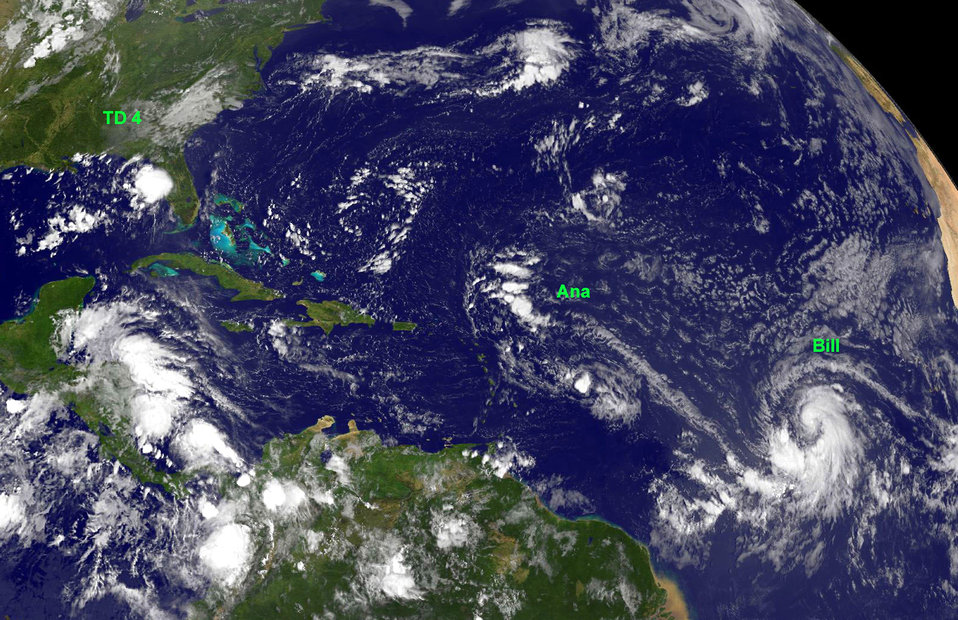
August 16, 2009 - Hurricane Season 2009: Tropical Depression 4 (TD4) to Make Florida Panhandle Landfall as Claudette; Ana and Bill Following